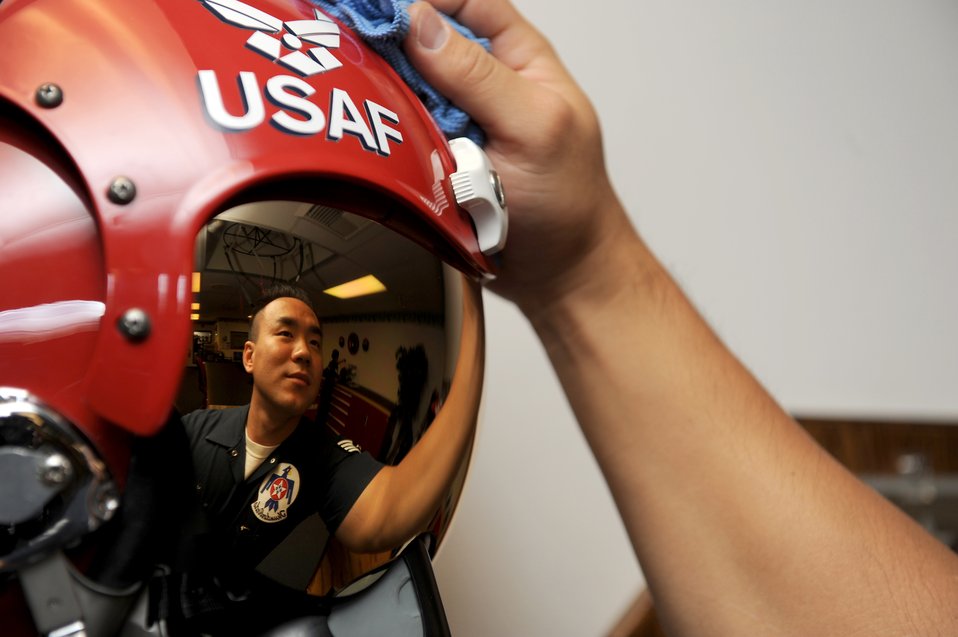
Keep it shiny

Staff Sgt. Sang Lee wipes down a display helmet in the U.S. Air Force Air Demonstration Squadron 'Thunderbirds' flight equipment room at Nellis Air Force Base, Nev., Dec. 17, 2010. Sergeant Lee is an aircrew flight equipment specialist with the Thunderbirds.